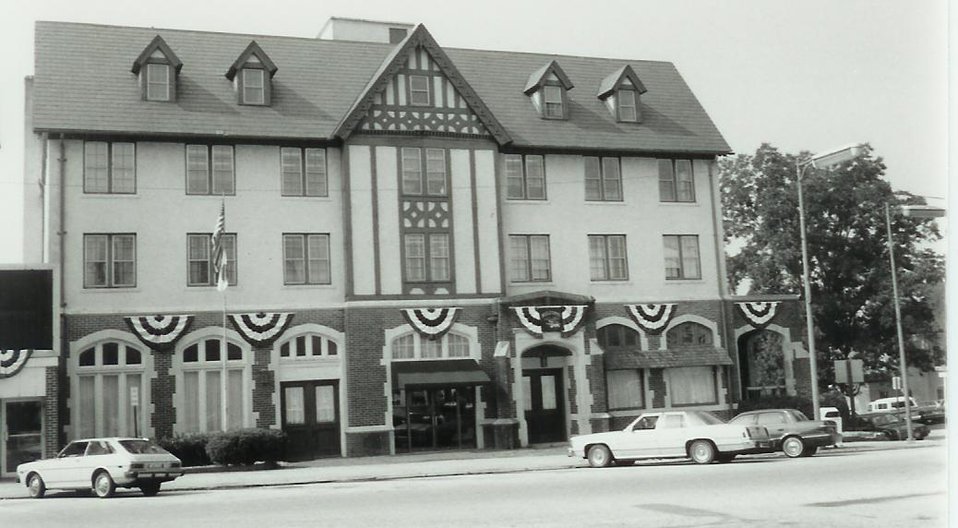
oldbuilding